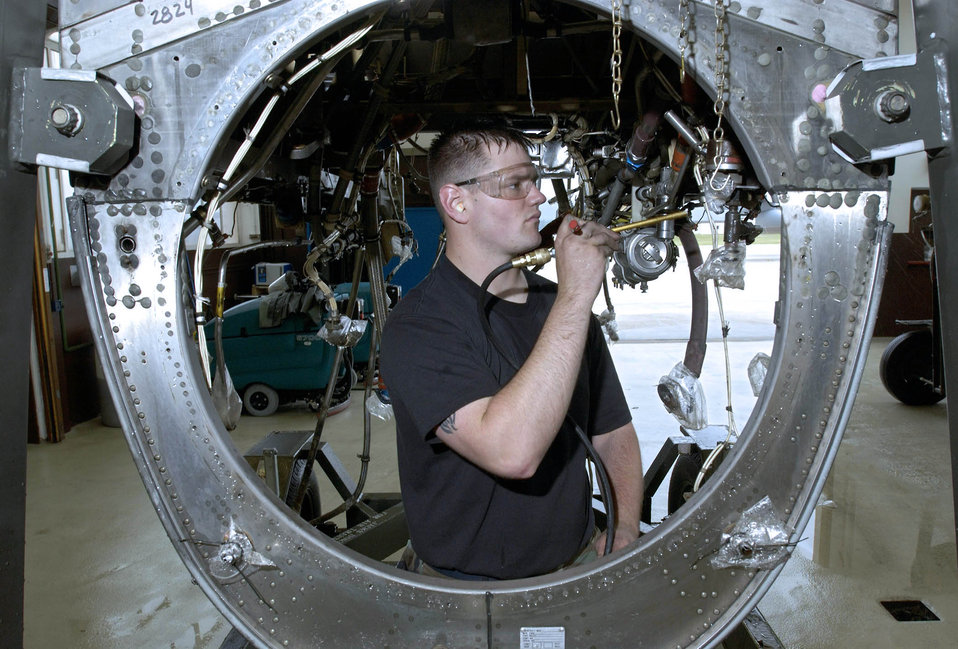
Herculean engine

RAMSTEIN AIR BASE, Germany -- Senior Airman Tyler Kehm removes excess water after cleaning a section of a C-130 Hercules engine. The 86th Maintenance Squadron's propulsion flight here is the focal point for any C-130 engines needing repairs in Europe or those deployed supporting operations Iraqi Freedom and Enduring Freedom.